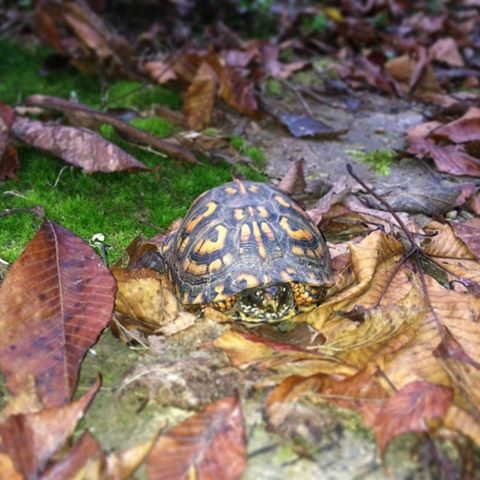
Photo of the week - Box turtle (WV)

Photo of the Week - 10/28/13

This box turtle took advantage of the upland trail at Ohio River Islands National Wildlife Refuge.

Credit: USFWS

www.fws.gov/refuge/ohio river islands/